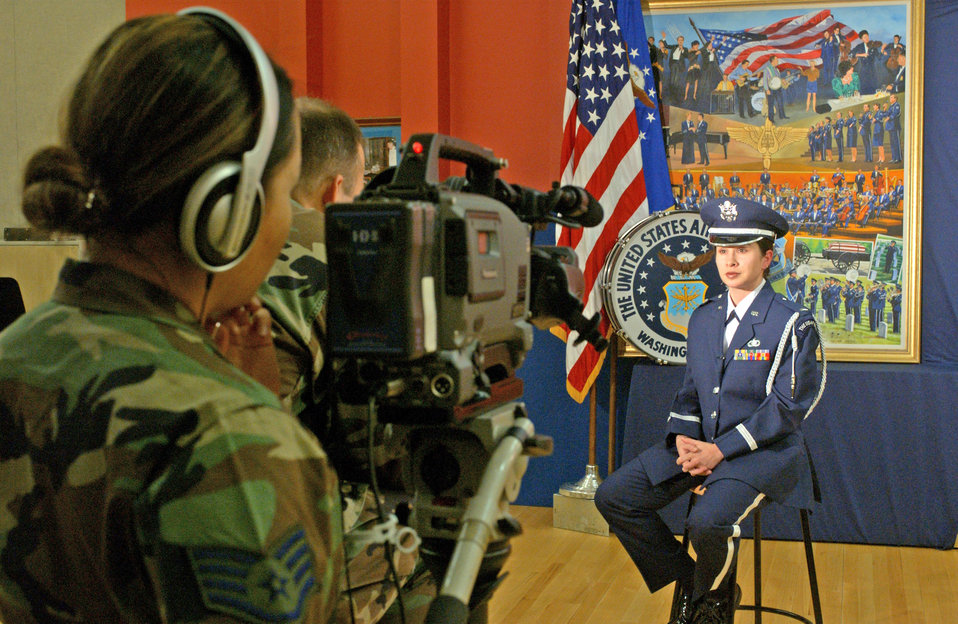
Letting the folks know

WASHINGTON -- An Army and Air Force Hometown News Service team interviews 1st Lieutenant Christina Moore after a U.S. Air Force Band rehearsal Jan. 5, 2005. The Band at Bolling AFB, D.C., is practicing extensively for upcoming ceremonies during the 55th Presidential Inauguration Jan. 20. Lieutenant Moore is the band's flight commander, and the team is from San Antonio.